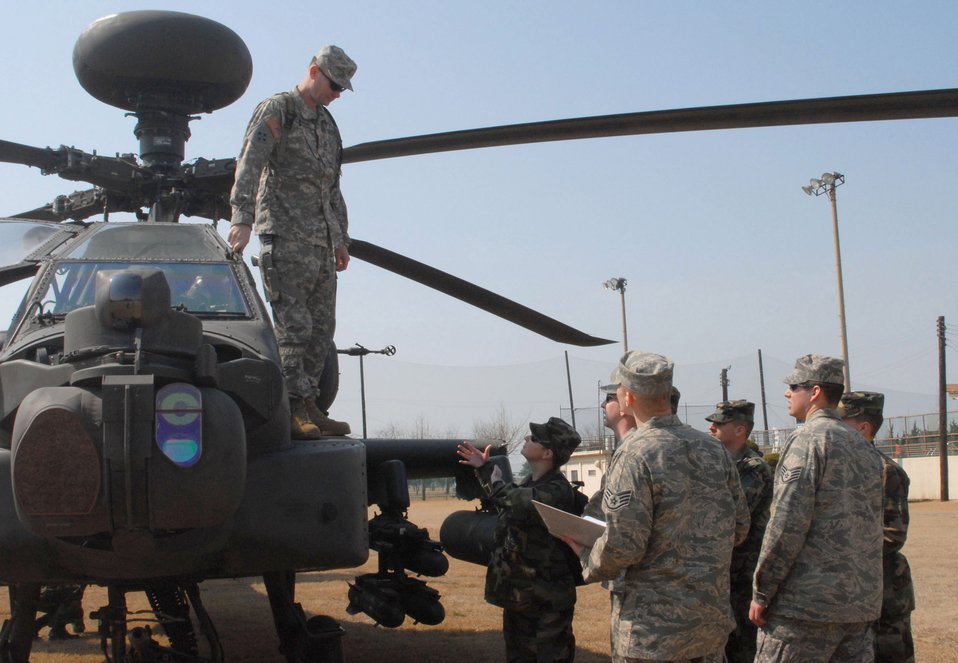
Army shows off Apache at Kunsan

Chief Warrant Officer 3rd Class Pat Nager, a standardization instructor pilot with Charlie Company, 42nd Aviation Battalion, from Camp Humphreys, South Korea, answers questions about the AH64D Apache helicopter posed by explosive ordnance disposal Airmen from the 8th Civil Engineer Squadron March 10 at Kunsan Air Base, South Korea. Army aviators brought the helicopter to Kunsan to inform Airmen about the aircraft and the Army's current mission in South Korea.